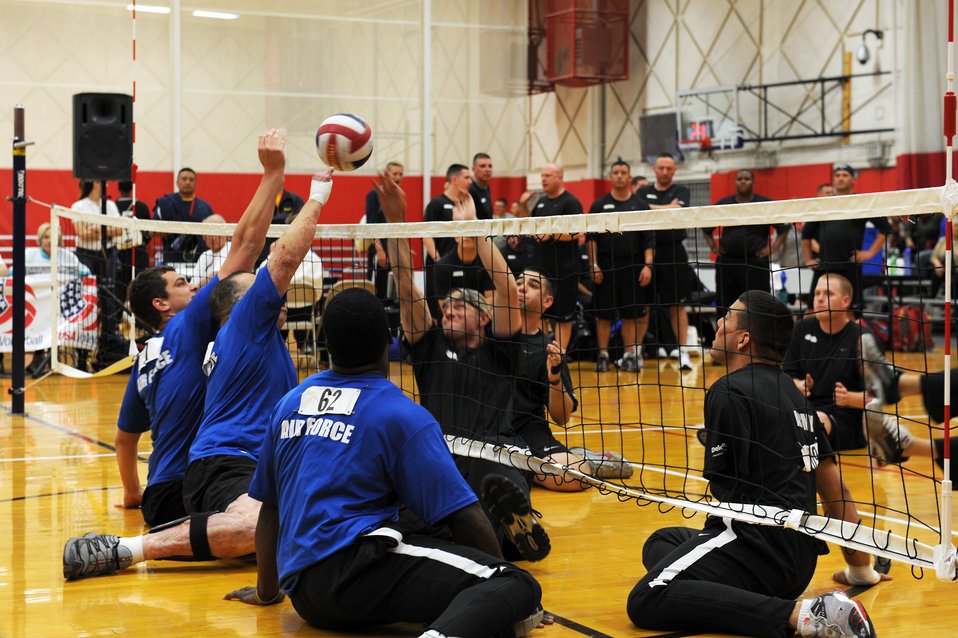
AF Volleyball

Air Force team make winning point to win during the Warrior Games volleyball match against the Army May 12, 2010 at the Olympic Training Center, Colorado Springs. The Air Force went on to win the game 15-7. The Warrior Games competition began May 10 and finishes on May 14, 2010 at the U.S. Olympic Training Center in Colorado Springs.